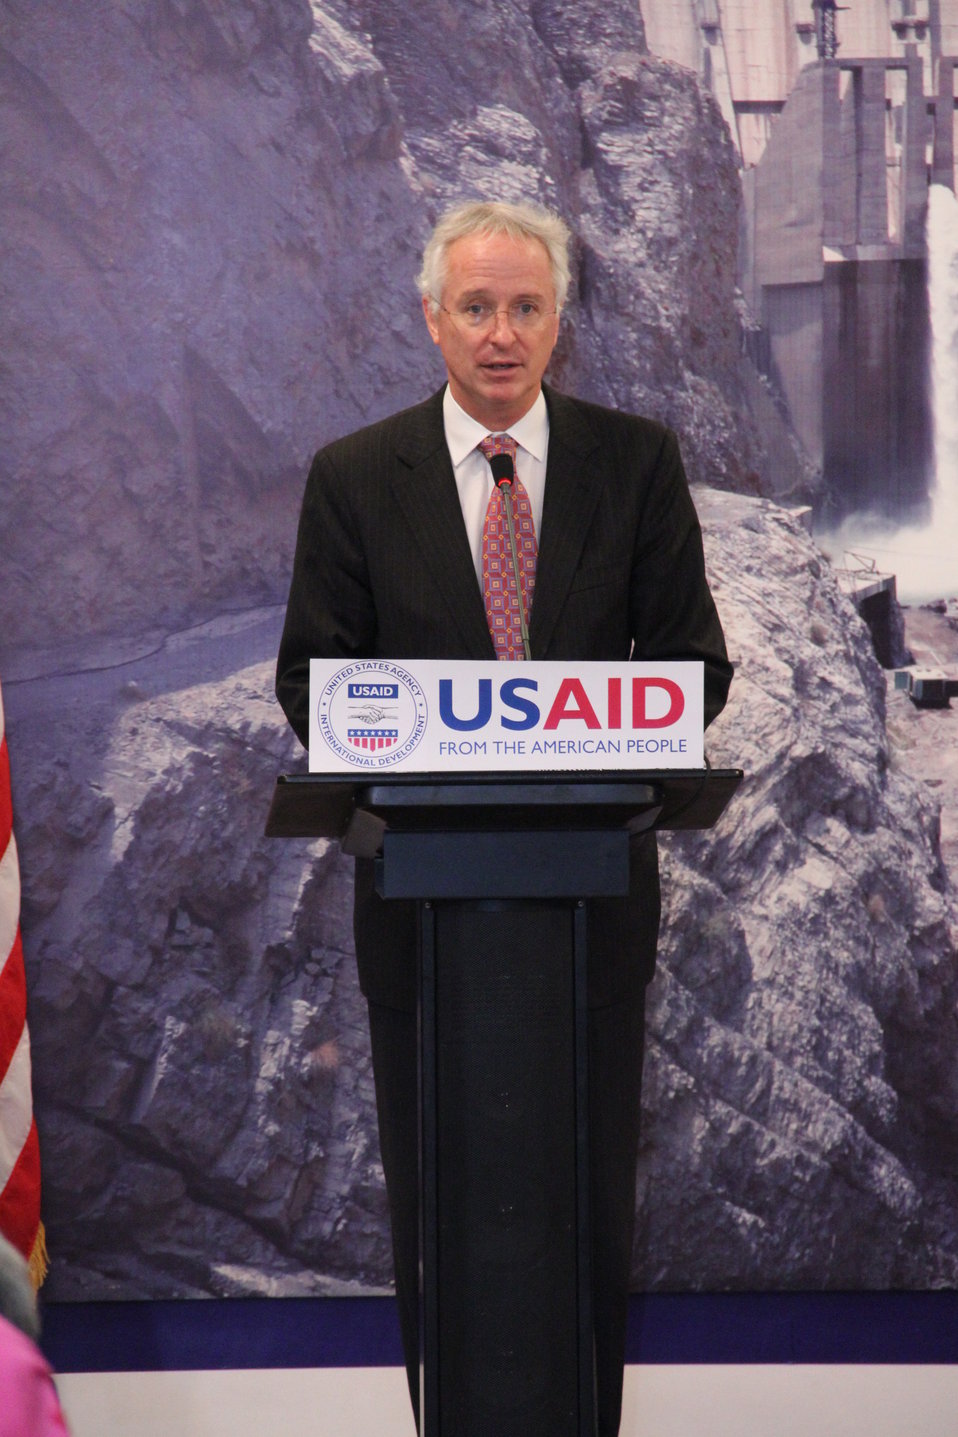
Photo Exhibition Celebrate US-PAK Cooperation at PNCA, Islamabad on April 13, 2012

Mr. Cameron Munter, Us Ambassador addressing the Media & Officials